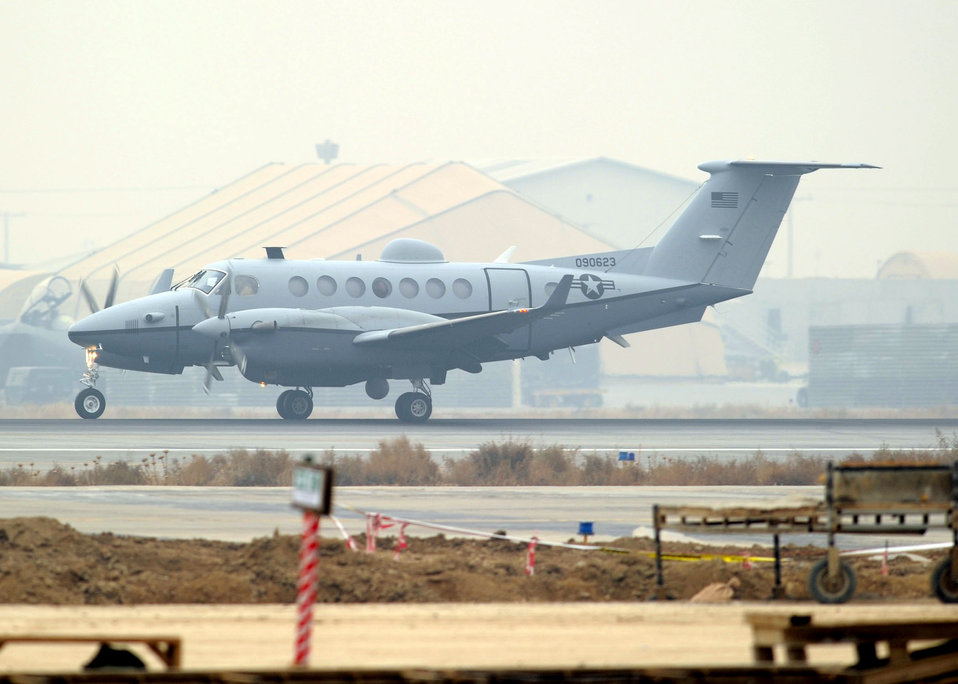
Collecting data and intelligence

A MC-12 landed at Bagram Airfield, Afghanistan, Dec. 27, 2009, bringing another capability to Operation Enduring Freedom. The MC-12 is not just an aircraft, but a complete collection, processing, analysis and dissemination system.